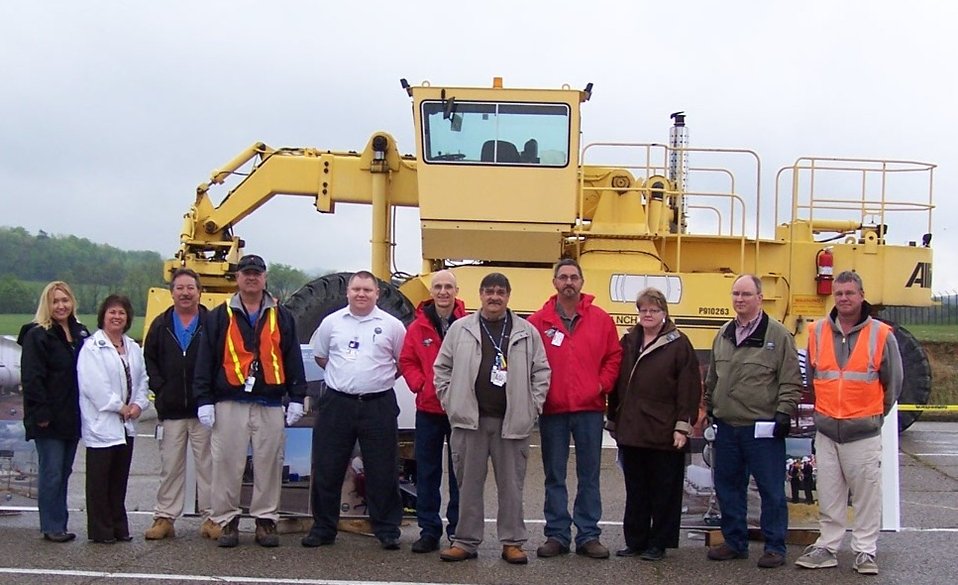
Paducah and Portsmouth Sites Advance Operations at DUF6 Plants

Babcock & Wilcox Conversion Services employees demonstrated depleted uranium hexafluoride (DUF6) project cylinder movements to 1,200 area students at the plant at the Piketon site earlier this year.

DUF6 is a byproduct of past uranium enrichment operations at gaseous diffusion plants. Large-scale uranium enrichment in the U.S. began as part of atomic bomb development by the Manhattan Project during World War II.